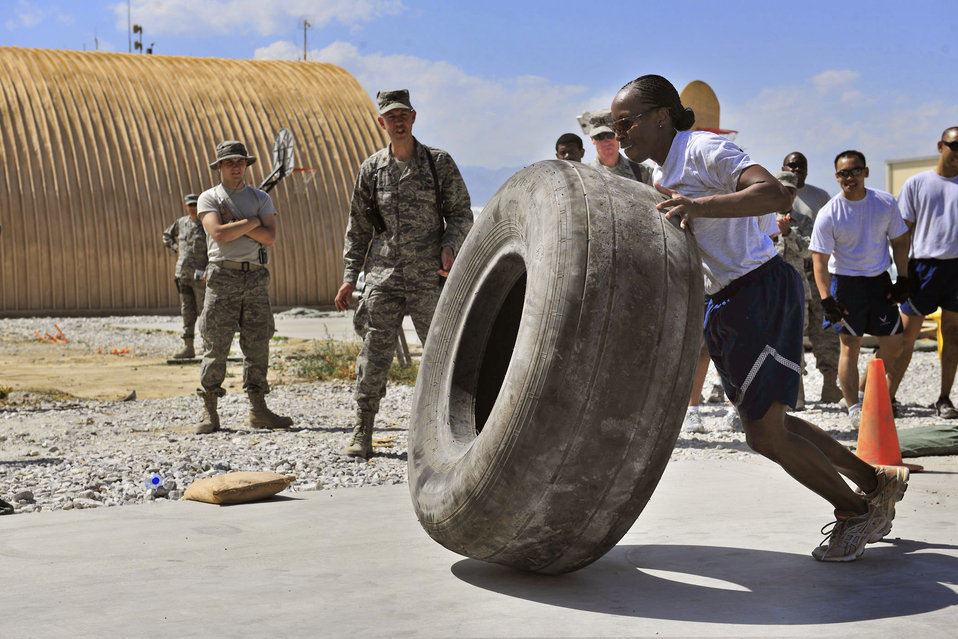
Easy to flip

Senior Master Sgt. Anita Easter flips a tire in the last leg of the strongman competition during the Commanders Cup at Bagram Airfield, Afghanistan, July 4, 2010. The Commanders Cup was a morale-building contest between wing units featuring sporting events. She is the superintendent for the staff judge advocate's office.